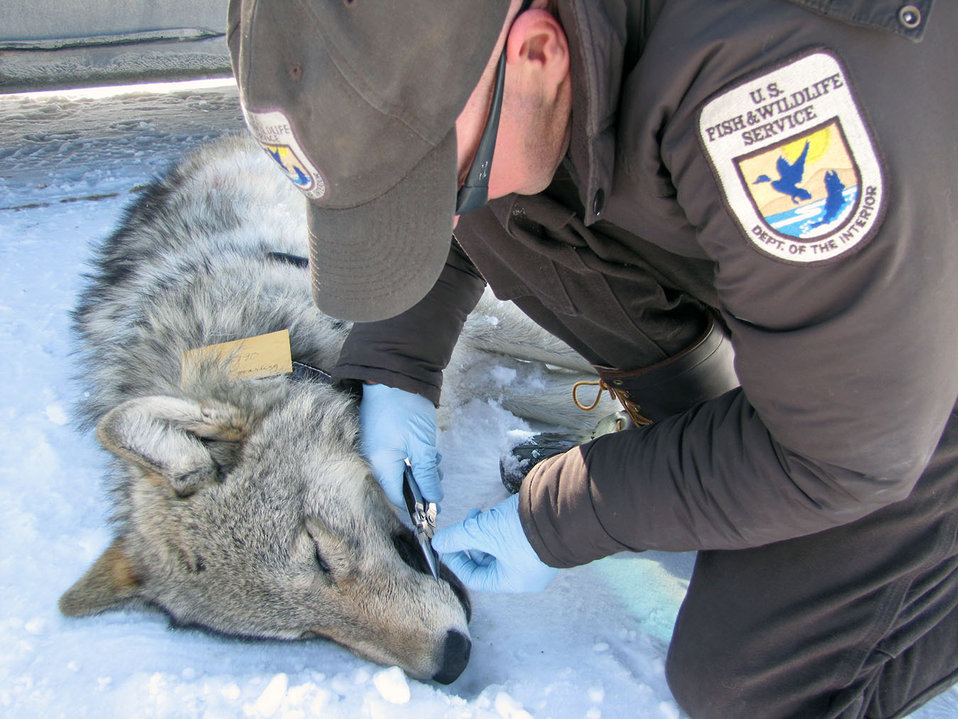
Collecting a Sample

Refuge Biologist Eric Cole removes a whisker from a male yearling. The sample can be used for a sample isotope analysis to learn about the animal's diet.